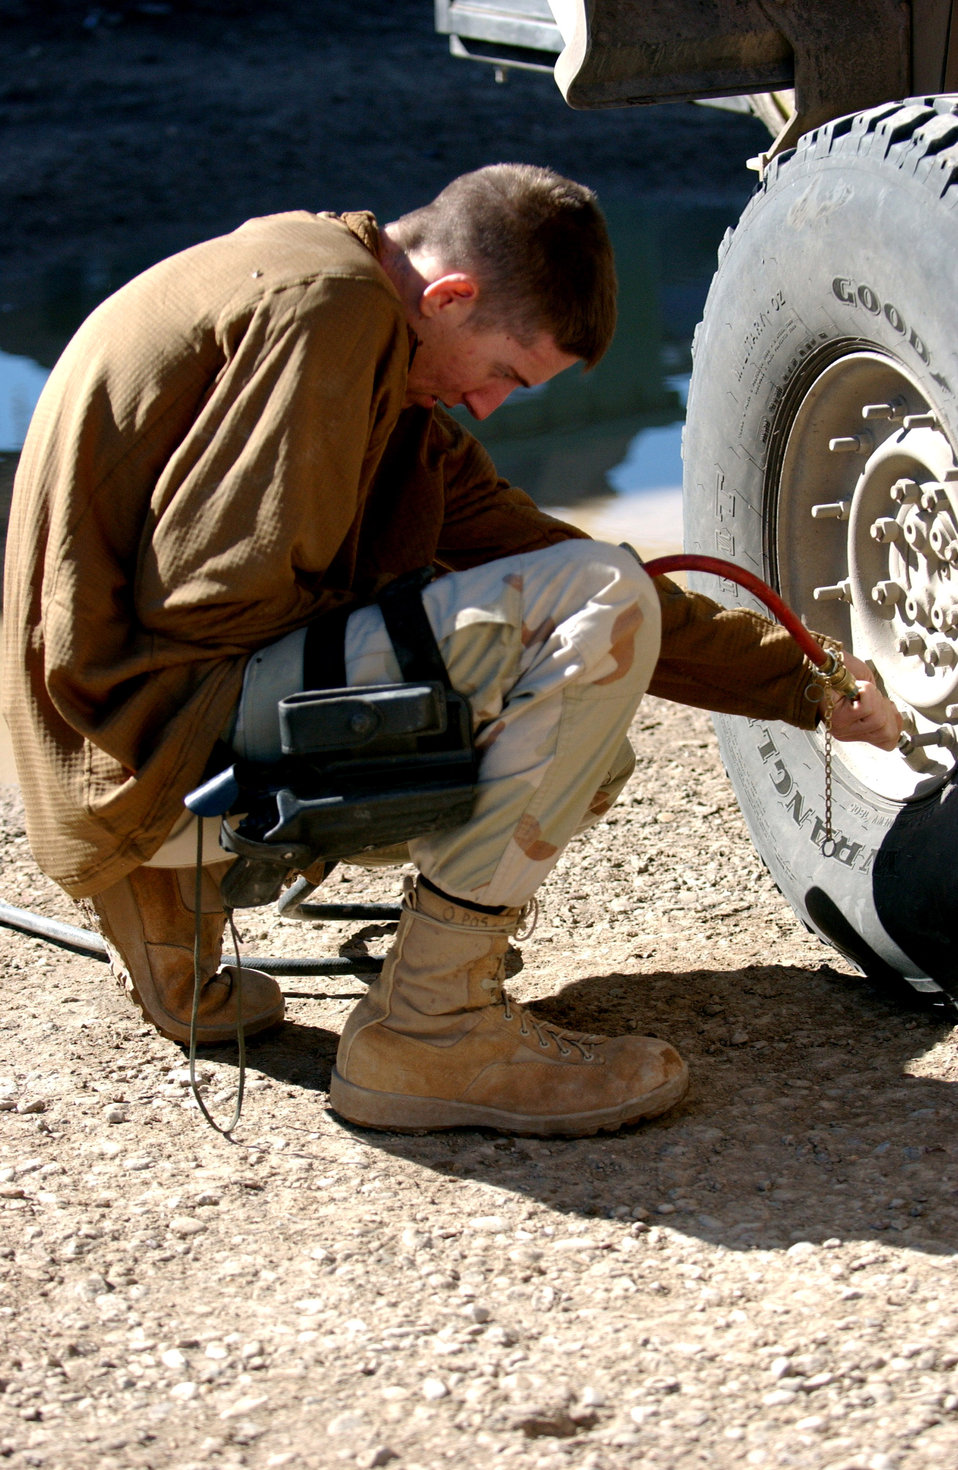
Patrolling Baghdad

Senior Airman Paul Forbe checks the air pressure of a high mobility, multi-wheeled vehicle, Nov. 10. He is with Detachment 7, 732nd Expeditionary Security Forces Squadron's whose mission is to deploy into Baghdad's streets to assist Iraqi police in achieving self-sufficiency and enable orderly control of their battle space.